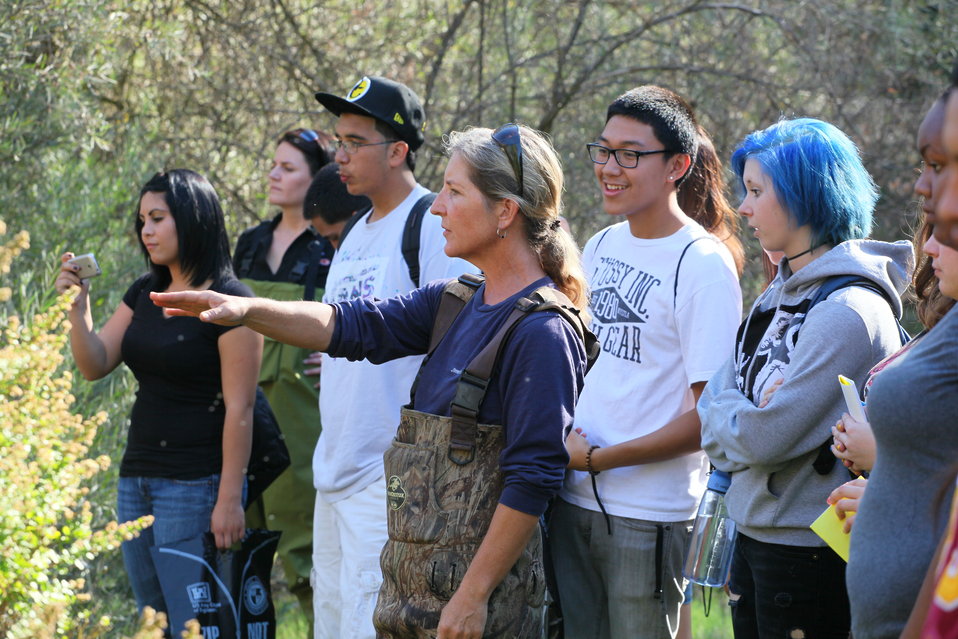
A river full of education

Fishery biologist Kari Burr, with the Fishery Foundation, talks to students from Stagg and Bear Creek high schools of Stockton, Calif., about fish habitats along the Calaveras River near New Hogan Dam, Oct. 22, 2011. The U.S. Army Corps of Engineers Sacramento District helped host the Calaveras River Education and Appreciation Day near Valley Springs, Calif., in partnership with the U.S. Fish & Wildlife Service’s “Connecting People with Nature” program. Learning activities for the students during the event included water samples, bird watching and underwater video camera observations.